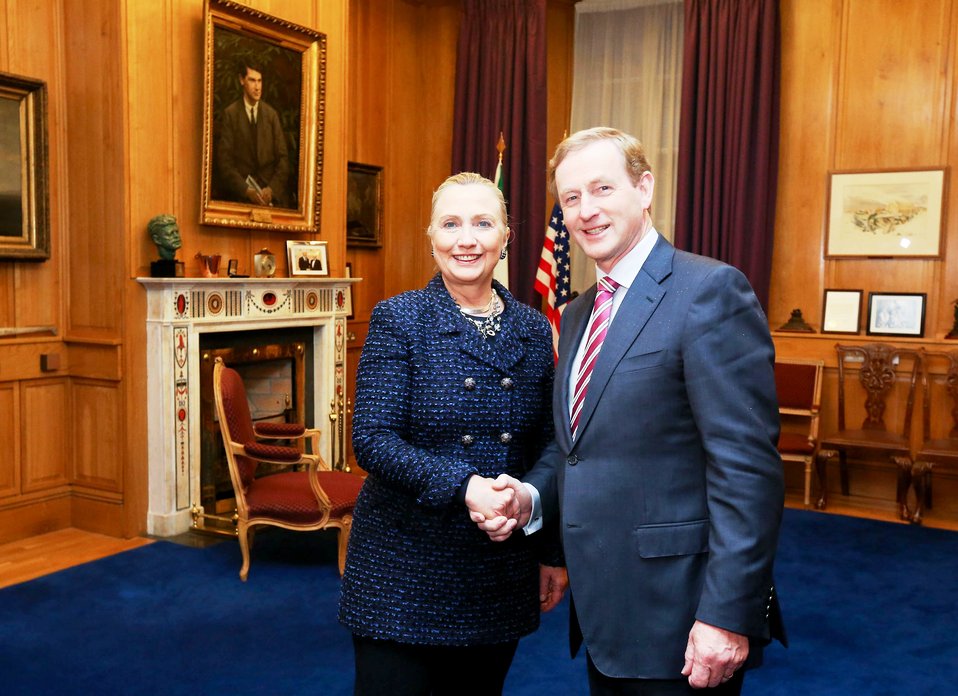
Secretary Clinton Meets With Taoiseach Kenny

U.S. Secretary of State Hillary Rodham Clinton meets with Taoiseach Enda Kenny in Dublin, Ireland, December 6, 2012.